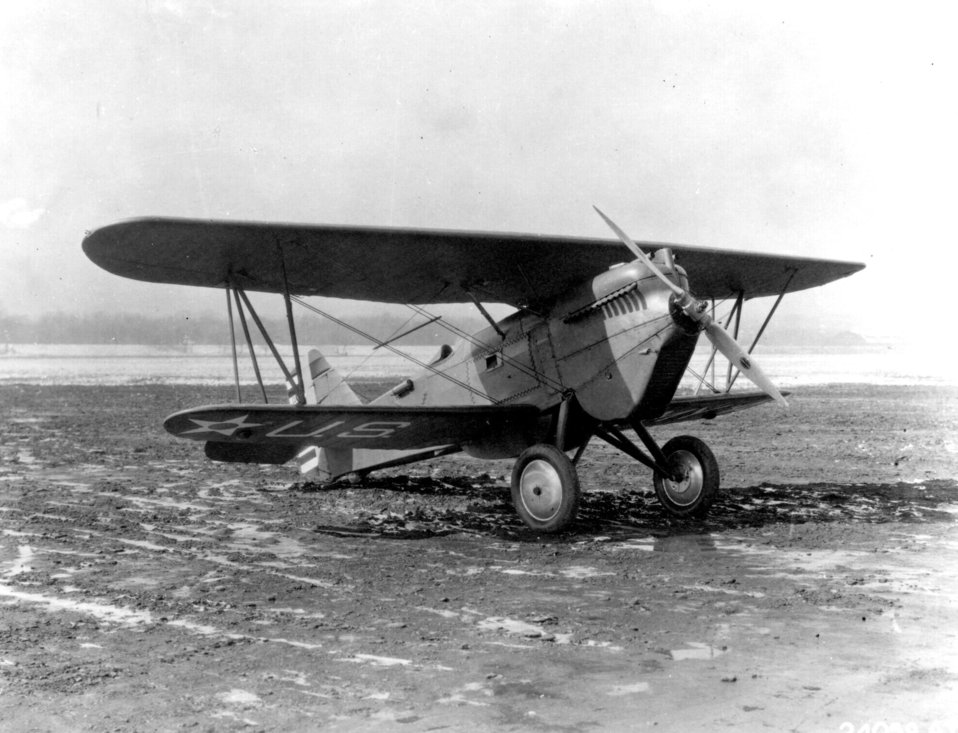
The Curtiss P-1 Hawk

EARLY YEARS-- The Curtiss P-1 Hawk was the first US Army aircraft to be assigned the P designation. The first production P-1, serial number 25-410, was delivered on 17 August, 1925.